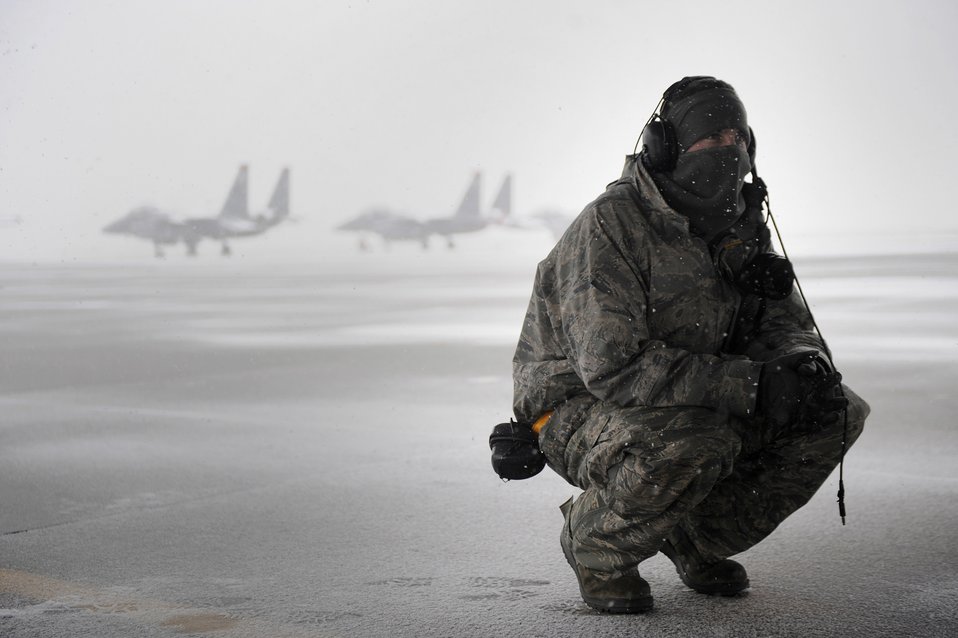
Keeping warm

Senior Airman Stephen Held, a crew chief with the 391st Fighter Squadron, takes a break from the snow during an exercise Nov. 21, 2010, on the flightline at Mountain Home Air Force, Idaho.